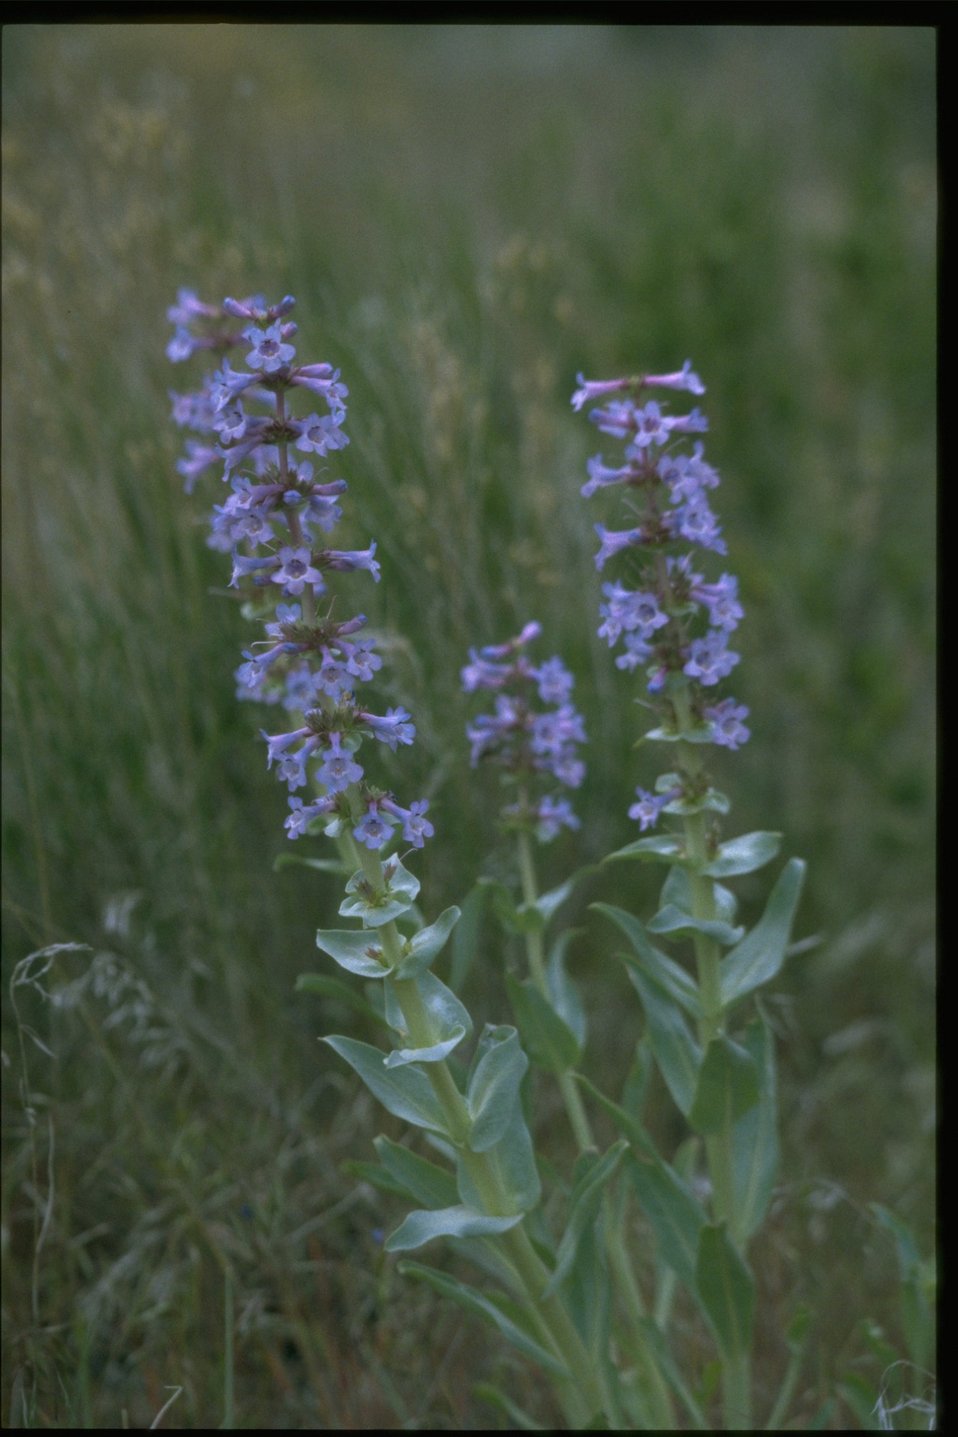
Closeup shot of Lupine wildflowers.